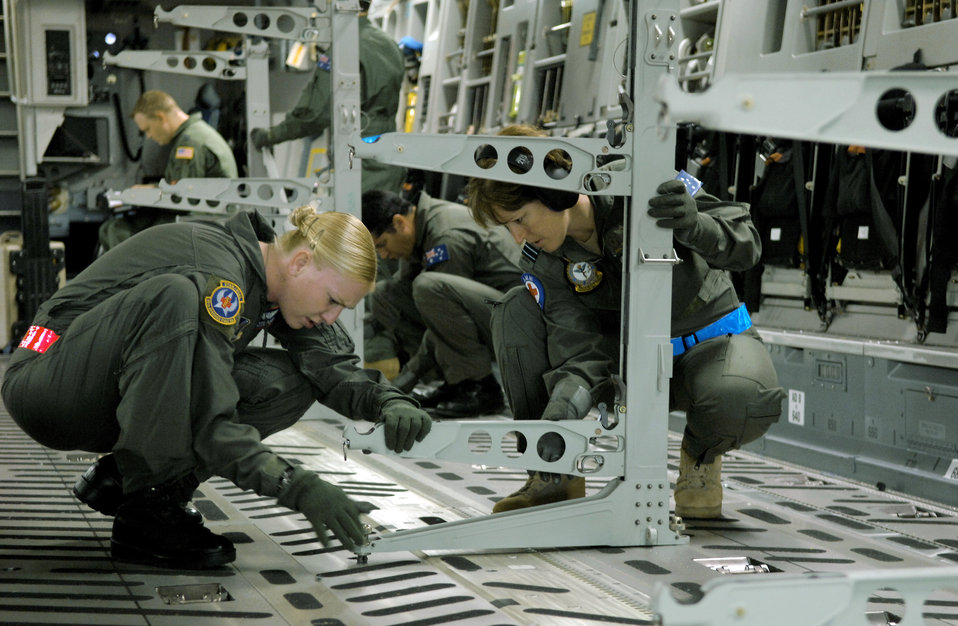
Australians train to save lives on C-17

Staff Sgt. Kristen Lewis (left) and Royal Australian Air Force Flight Lt. Michelle Cole set up litter racks on a C-17 Globemaster III during aeromedical evacuation operations training Oct. 17 at Hickam Air Force Base, Hawaii. Airmen from the 18th Aeromedical Squadron at Kadena Air Base, Japan, are at Hickam to train RAAF medical personnel who will be using specialized equipment and the C-17 for aeromedical evacuation. Sergeant Lewis is with the 18th AMS.